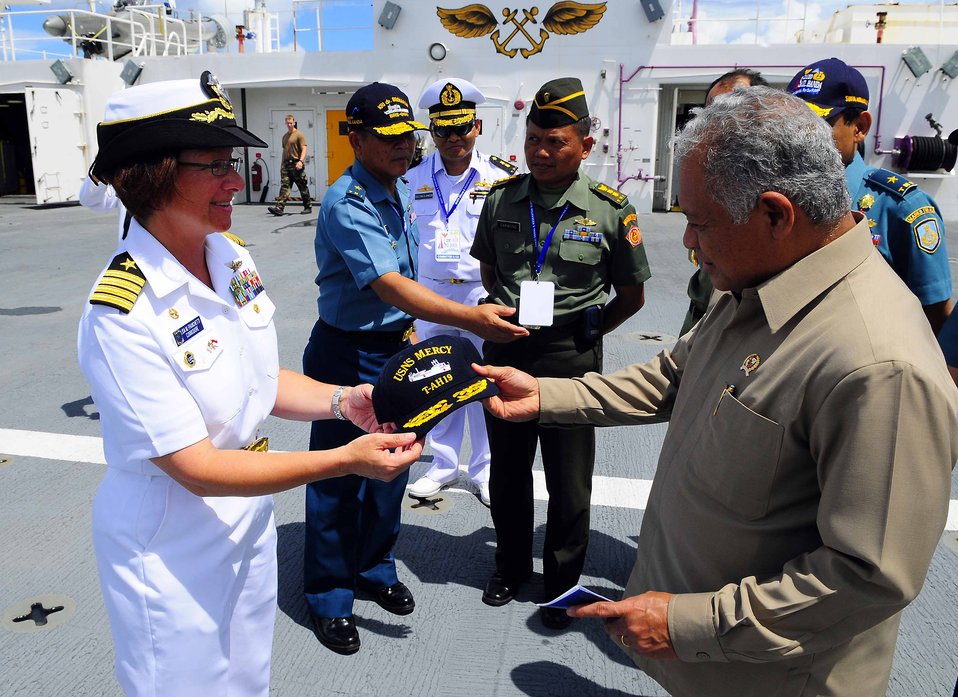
PP 2010 Commander Capt. Franchetti Gives a USNS Mercy Ball Cap to Indonesian Defense Minister Dr. Purnomo Yusgiantoro

Pacific Partnership 2010 Commander Capt. Lisa M. Franchetti gives a USNS Mercy (T-AH 19) ball cap to Indonesian Defense Minister Dr. Purnomo Yusgiantoro during his visit aboard the Military Sealift Command hospital ship on August 2, 2010. Mercy is in Ambon, Indonesia, participating in Sail Banda 2010, a series of events hosted by the Government of Indonesia to promote the future of small islands.